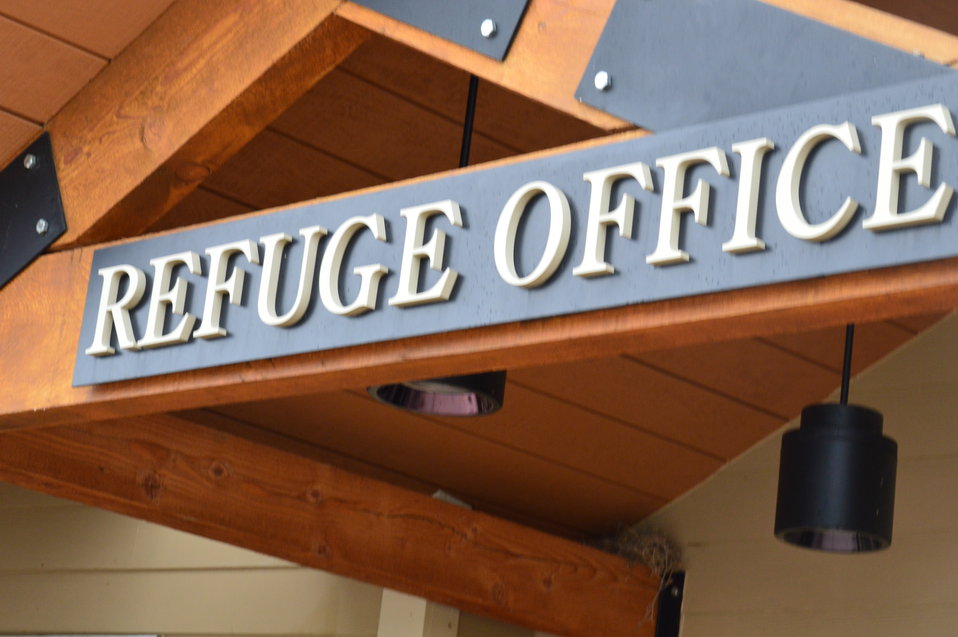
Refuge Office entrance